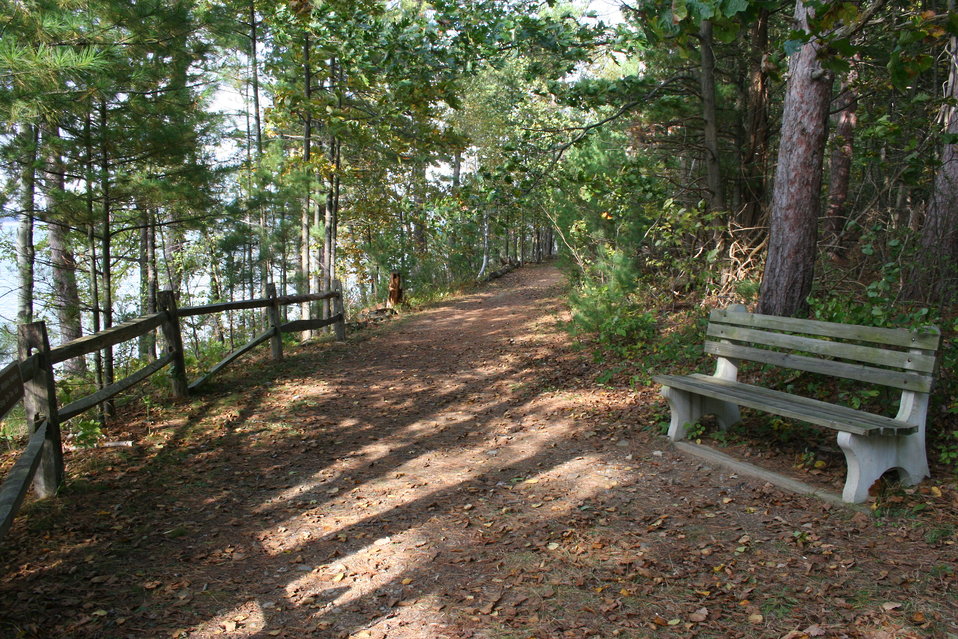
Ferry Way Trail

Bench on Ferry Way Trail at Great Bay National Wildlife Refuge, Newington, NH.